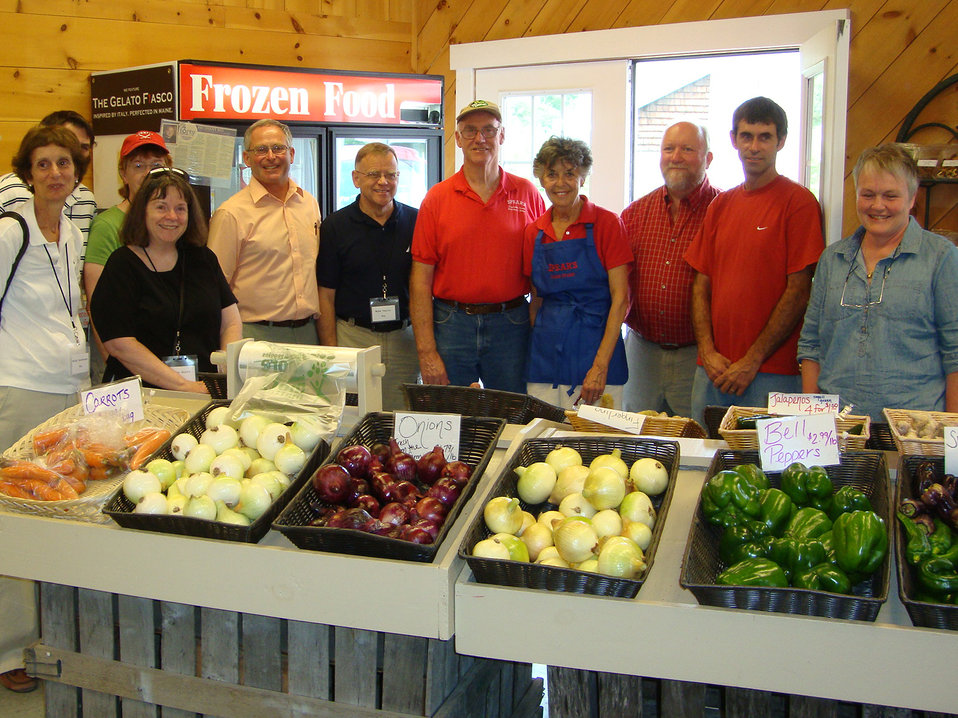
On the Road with Mike Taylor

FDA Deputy Commissioner Michael Taylor and colleagues visit the farm stand owned by the Spear family in Waldoboro, Maine. Bob Spear (center, in the red shirt) is a farmer and a former Maine commissioner of agriculture. He is flanked by Mike and his wife, Janet Spear. On Aug. 11, 2013, Mike and colleagues embarked on a multi-region tour, including the Pacific Northwest and New England, to get a first-hand look at produce production and irrigation operations, and to discuss the proposed Produce Safety Rule with growers, food industry representatives and state officials. For more about Mike's tour, read these FDA Voice blog posts:

• Hearing the Concerns of Maine Growers Striving for Agricultural Diversity
• On the Road with Mike Taylor: Touring the Pacific Northwest
• On the Road with Mike Taylor, Day 2: Frank Talk in Farm Country
• On the Road with Mike Taylor, Day 3: Families and Partnerships
• On the Road with Mike Taylor, Day 4: Looking to the Future